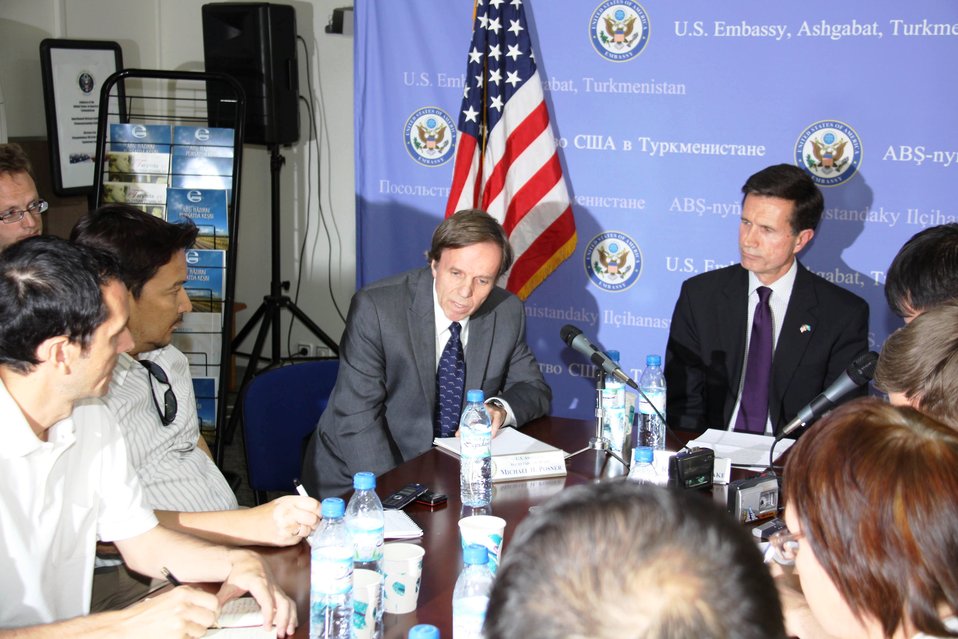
Assistant Secretary Blake and Assistant Secretary Posner Respond to Questions

U.S. Assistant Secretary of State for South and Central Asian Affairs Robert O. Blake and U.S. Assistant Secretary for Democracy, Human Rights and Labor Michael H. Posner respond to questions at a press conference with independence media in Ashgabat, Turkmenistan, on June 15, 2010.